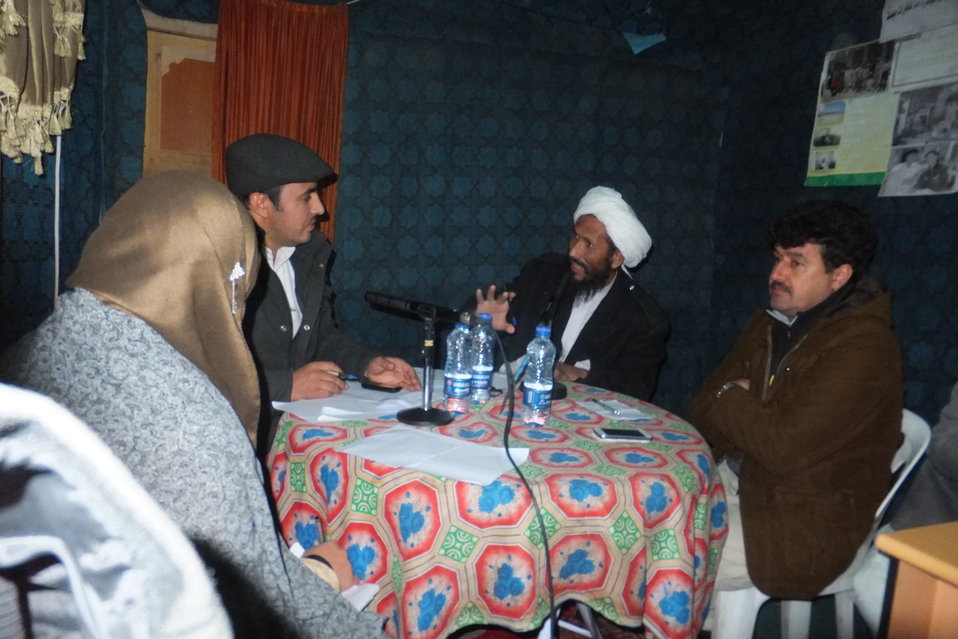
The Chaghcharan Youth Association organized a one-hour radio program on the harms of drug addiction and treatment methods on December 22nd.